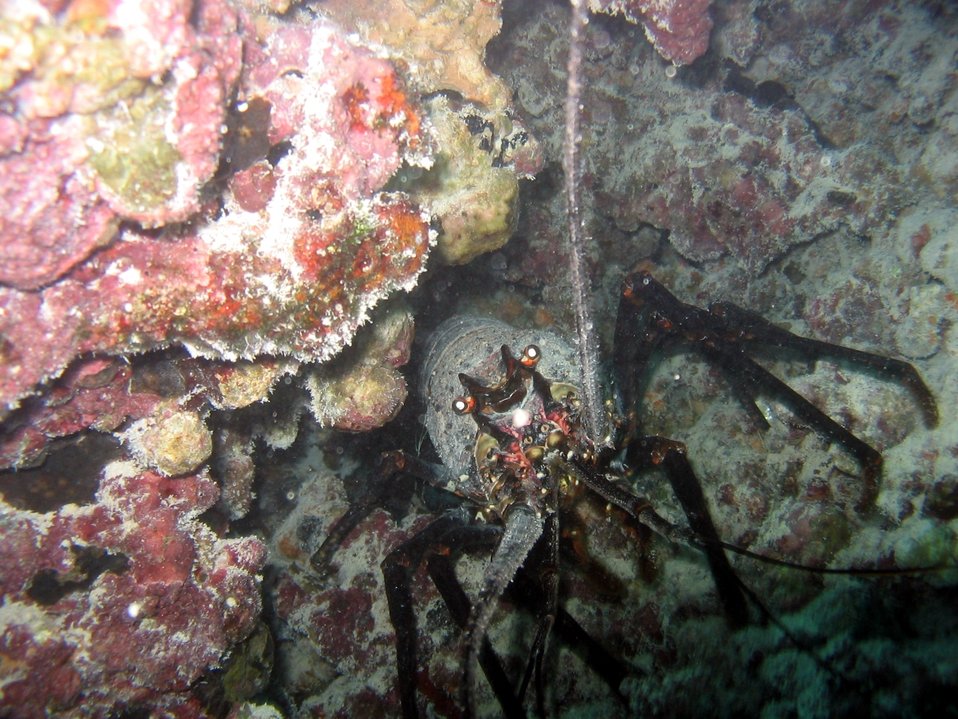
Spiny lobster (Panilurus sp.). Ula in Hawaiian.